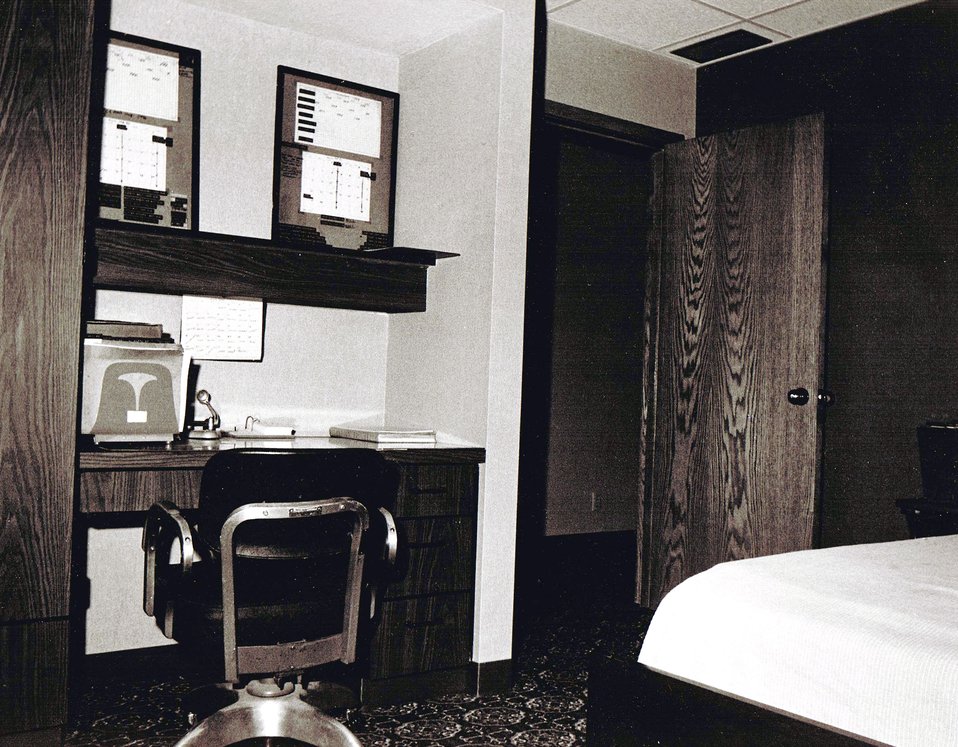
Alert facility bedroom

A bedroom inside a Minuteman II launch control facility in 1982. The facility was manned by 10 people with two individuals assigned as crew downstairs. The remaining eight included the facility manager who was usually the ranking enlisted person on site.